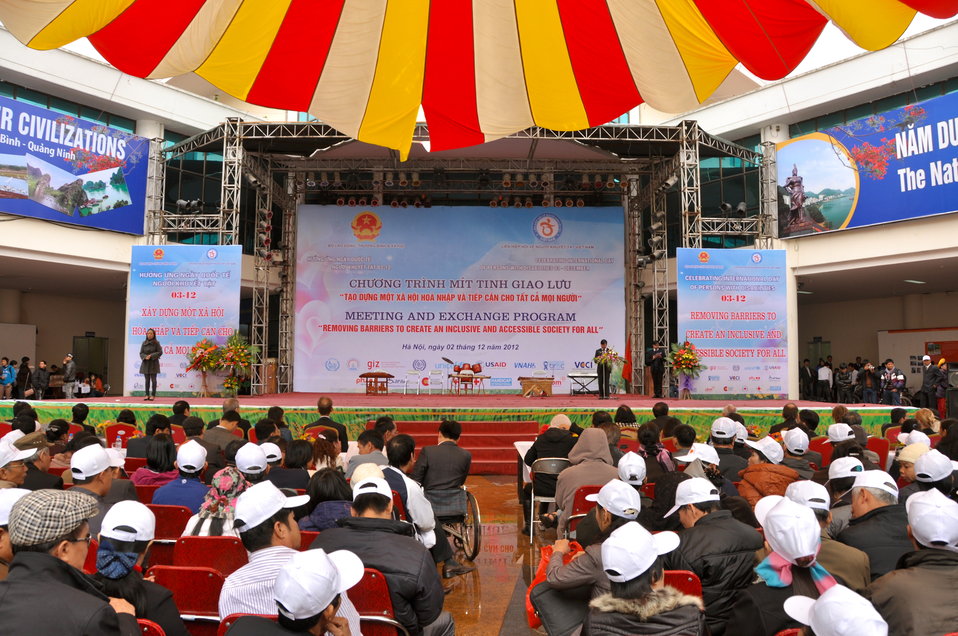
USAID joins celebration of International Day of Persons with Disabilities in Hanoi, Vietnam

December 2, 2012